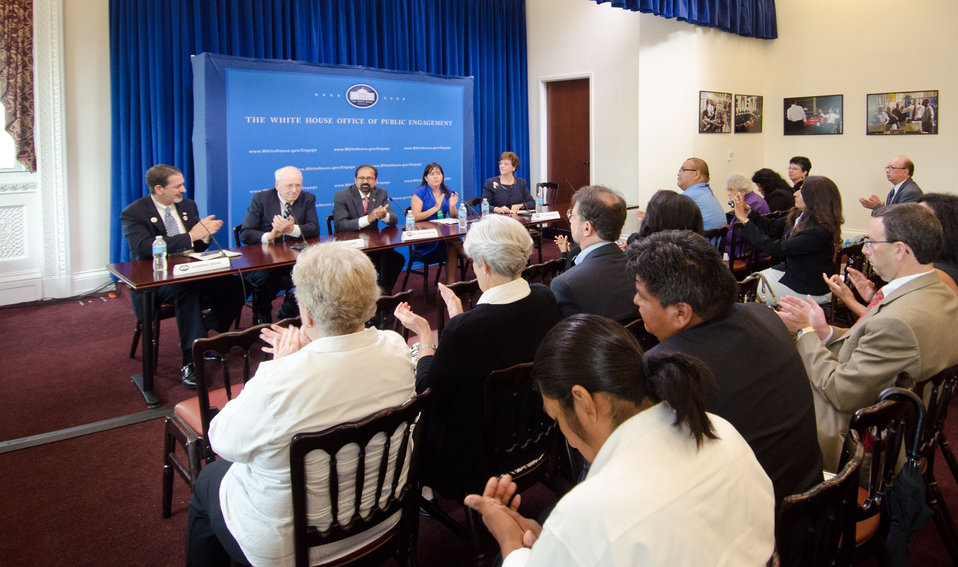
Eleven individuals were honored for their efforts to reduce hunger and increase food security in the U.S. and internationally at the White House Champions of Change Strengthening Food Security at Home and Abroad Event held at the White House on Thursday, September 6, 2012, in Washington, D.C. They include, World Food Prize Foundation President Kenneth Quinn; Auburn University (Alabama) College of Human Sciences Dean Dr. June Henton; Mandela MarketPlace Executive Director Dana Harvey; East Lake United Methodist Church Pastor Reverend Sally Allocca; Joshua’s Heart Foundation President Joshua Williams; Community Food Advocates, Inc. Co-Director Kathy Goldman; United for Healthy Schools Leader Jovita Flores; Catholic Medical Mission Board Project Director Dr. Claudia Llanten; Fort Valley State University (Georgia) Research Professor Interim Assistant Dean Dr. Govind Kannan;Tohono O’odham Community Action Co-Founder and President Terrol Johnson; and not pictured, Thriive Founder Erik Schultz).